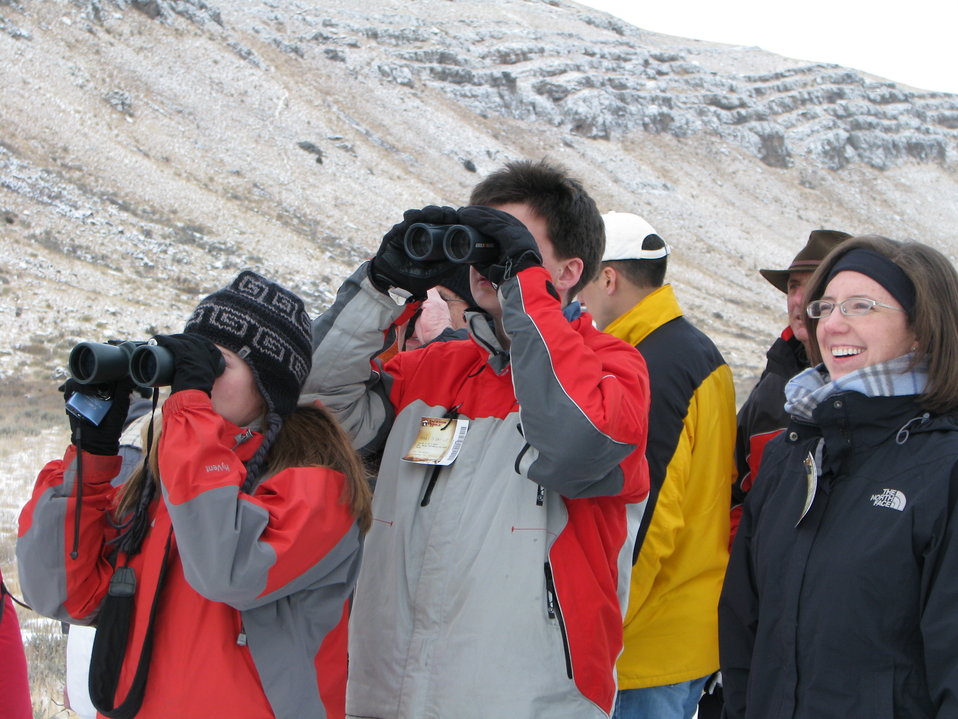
Entertained by Wildlife

Wildlife excursion participants delight in watching a group of bighorn sheep on the rocky cliffs along Miller Butte on the Refuge Road.